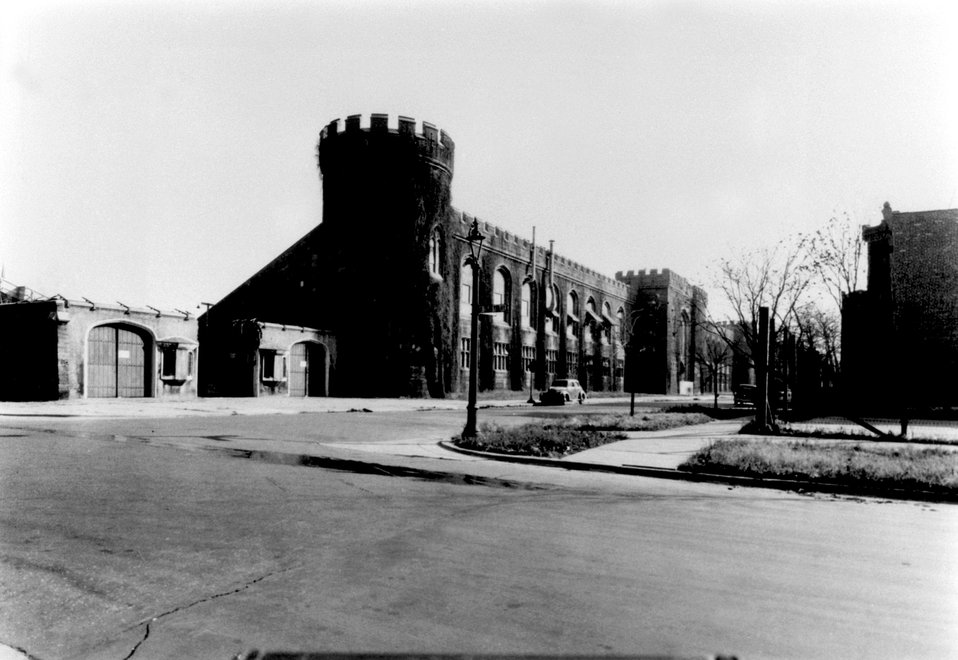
View of west end of Stagg Field, The University of Chicago, as it looked during World War II.